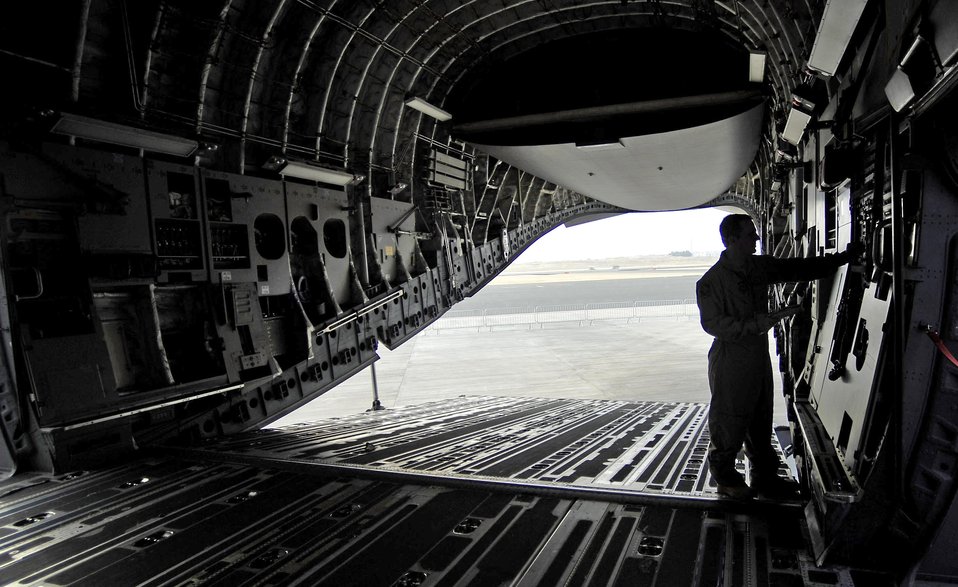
Maintainers keep airplanes flying during Bahrain International Airshow

Staff Sgt. Ken Travis troubleshoots a hydraulic system on a C-17 Globemaster III, Jan. 20, 2010, during the Bahrain International Airshow. Sergeant Travis is a flying crew chief with the 437th Aircraft Maintenance Squadron.